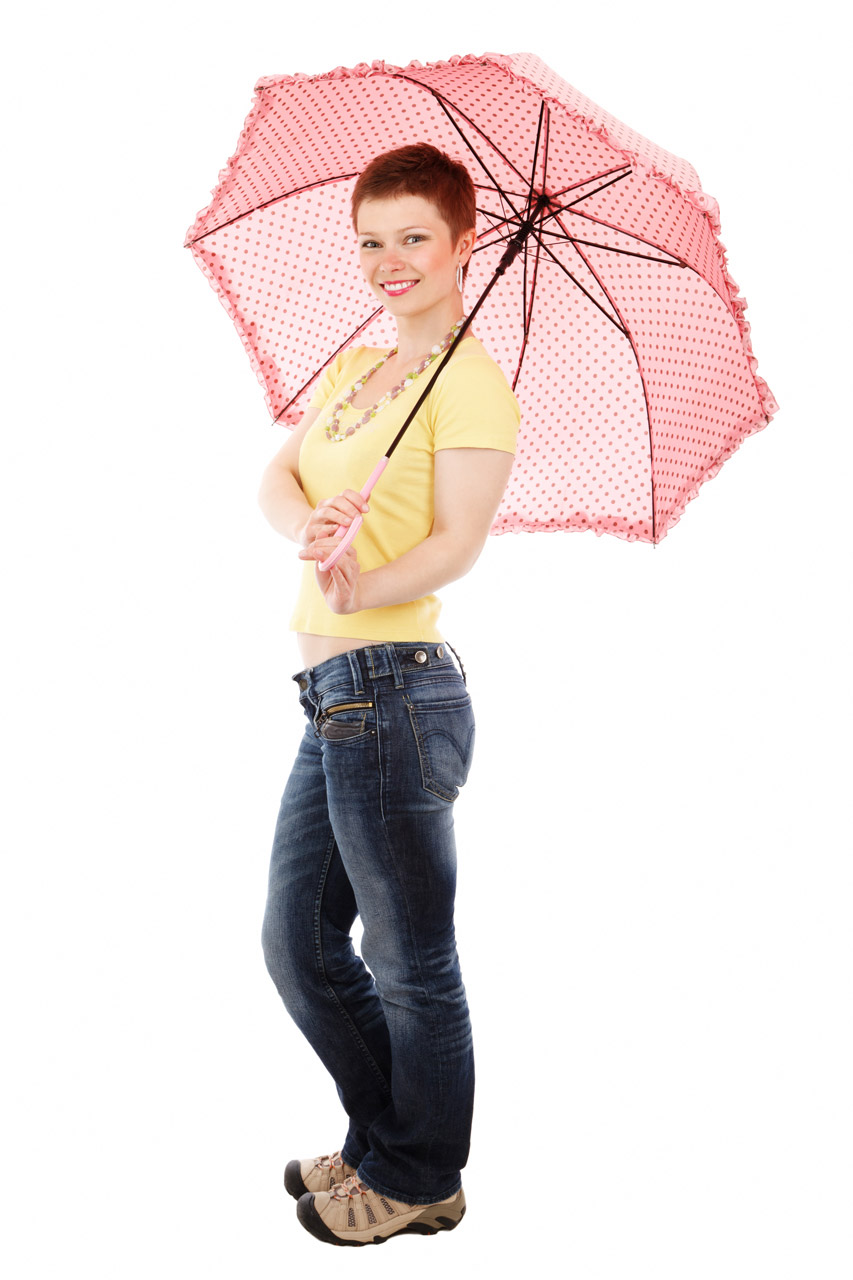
Posing with umbrella

Young woman posing with a pink umbrella isolated on white background.